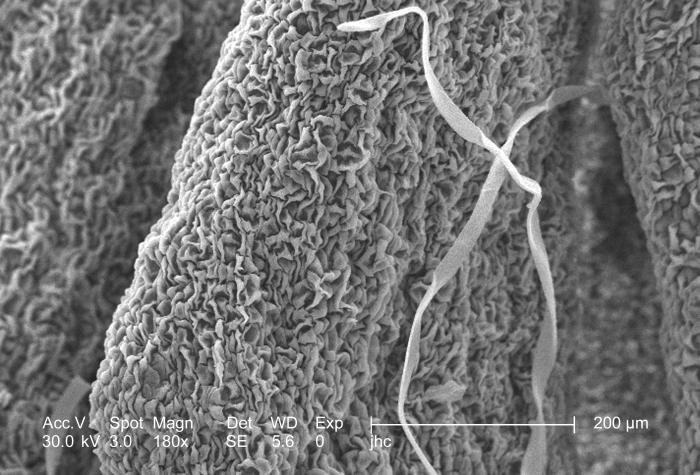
Under a magnification of 180x, this scanning electron micrograph (SEM) revealed some of the ultrastructural details seen on the surface of a "crimson clover", Trifolium incarnatum flower petal. This clover was blooming during the month of March on the grounds of the Centers for Disease Control headquarters in Atlanta, Georgia. The ribbony strands of debris are plant material particulates common to the flower's environment.